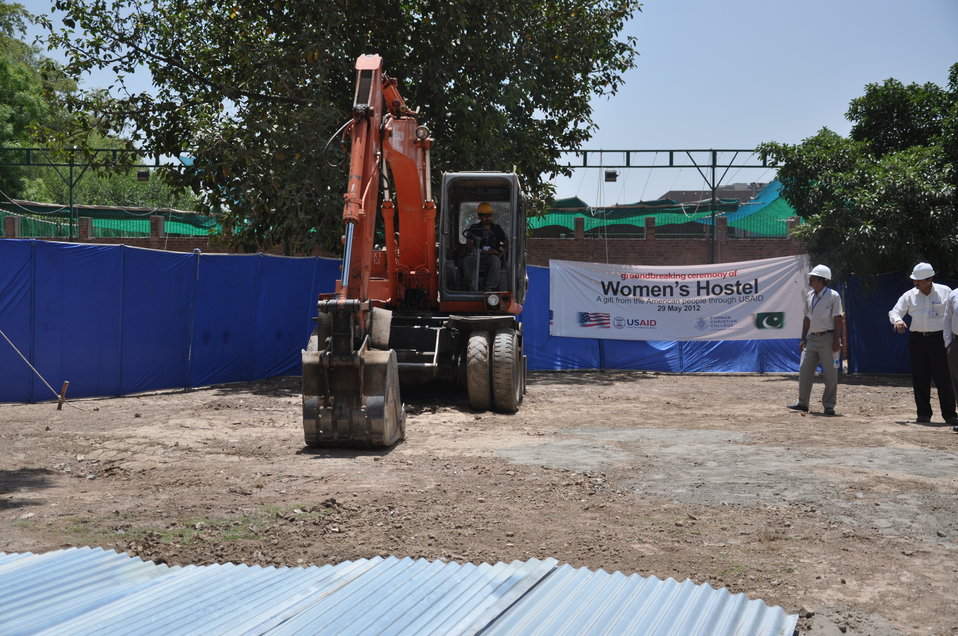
Groundbreaking ceremony for the USAID-funded women's hostel at Forman Christian College

Lahore May 29, 2012: U.S. Agency for International Development (USAID) Mission Director
Dr. Andrew Sisson and U.S. Consul General Nina Fite led the groundbreaking ceremony at the
new USAID-funded Women’s Hostel at Forman Christian College (FCC).